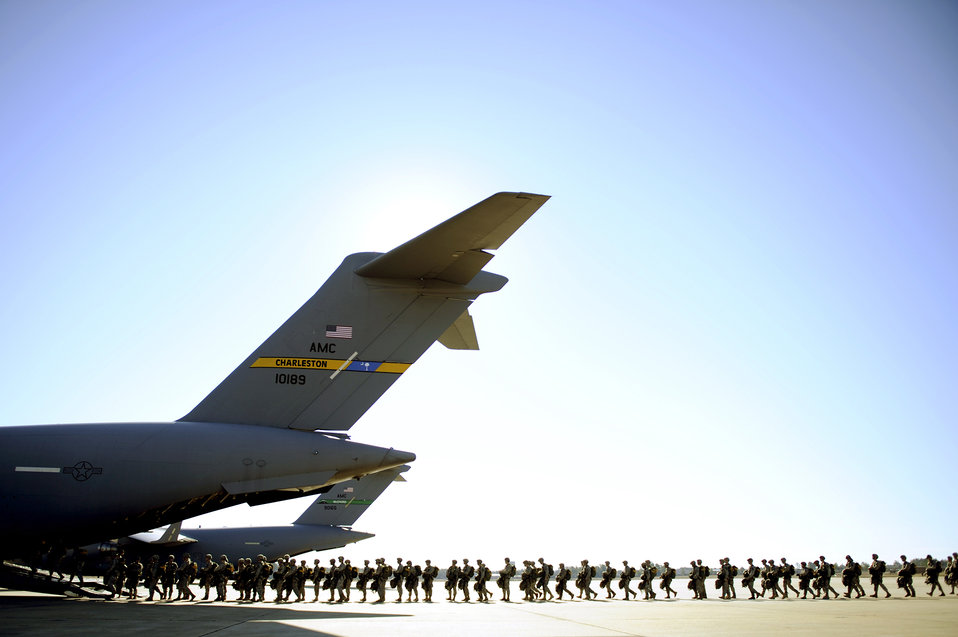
Waiting to board

Paratroopers assigned to the 82nd Airborne Division prepare to board a C-17 Globemaster III Feb. 9, 2011, during a joint operational access exercise at Pope Air Force Base, N.C.